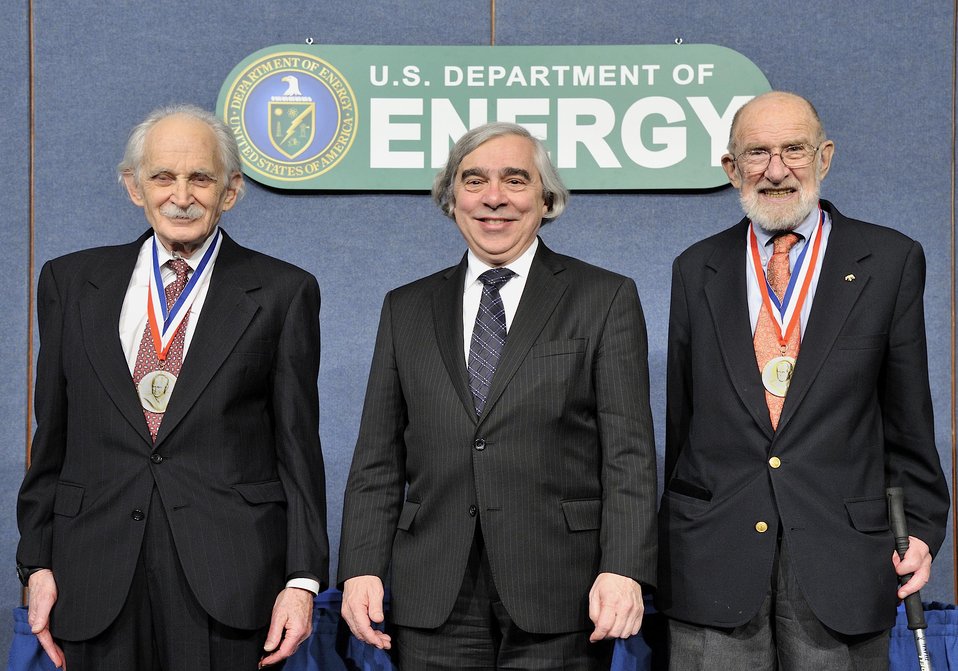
SECRETARY E. MONIZ WITH ANDREW SESSLER AND ALLEN J. BARD AT THE ENRICO FERMI AWARD ON FEBRUARY 3, 2014 AT THE U.S. DEPARTMENT OF ENERGY